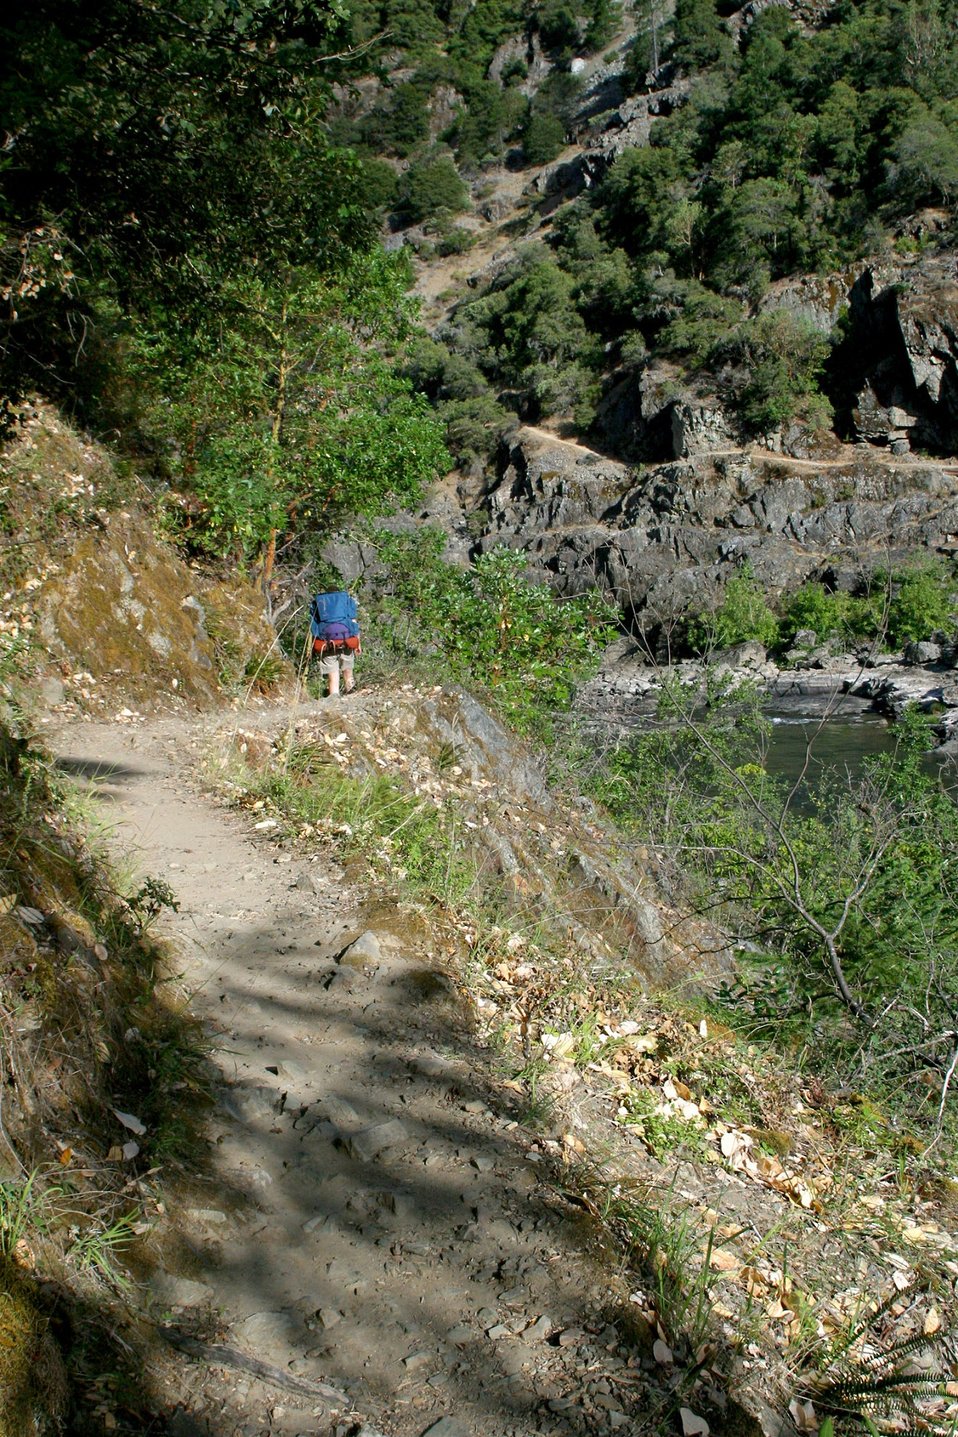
Hiking Rainie Falls Trail between Grave Creek and Rainie Falls.